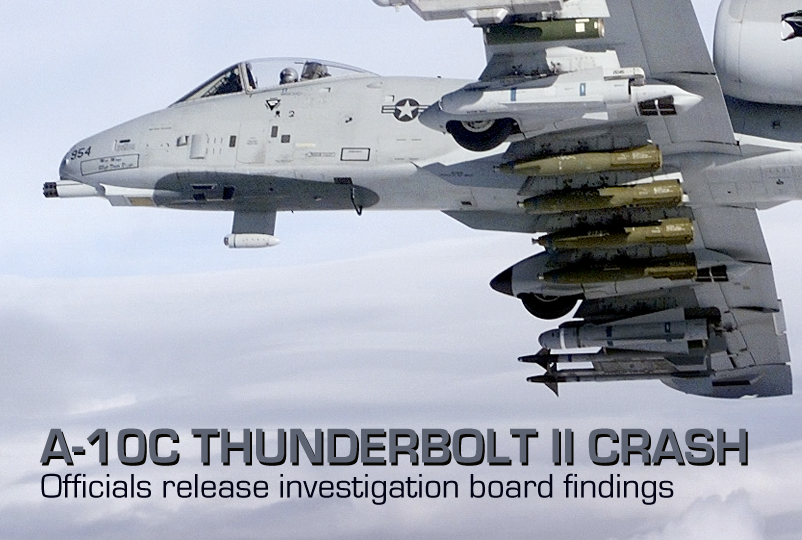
A-10C Thunderbolt II Crash